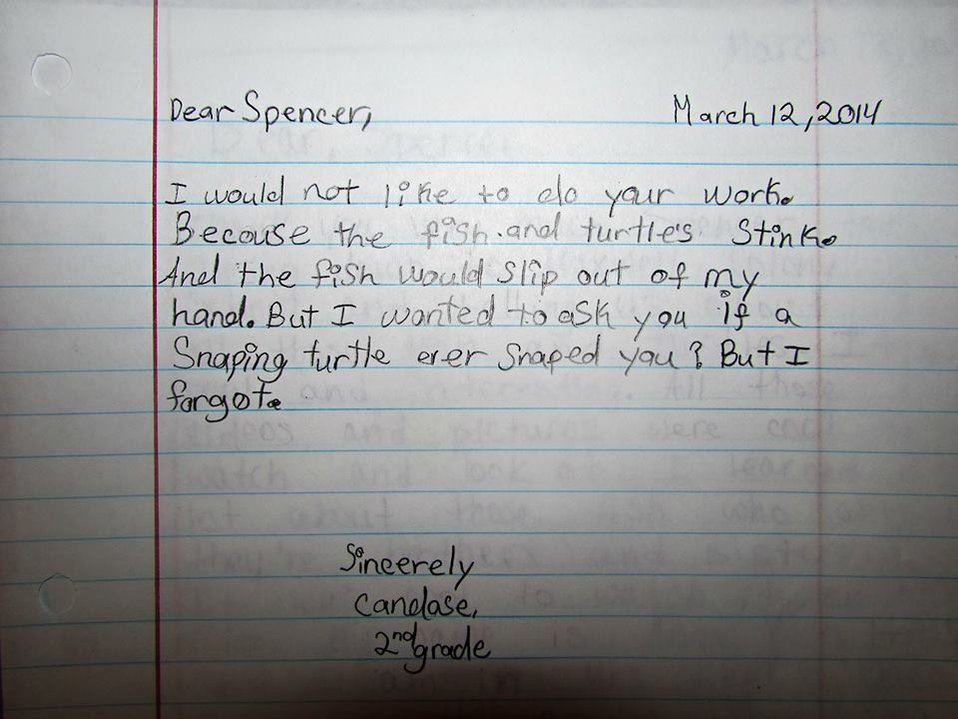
Thanks?

Usually our tours inspire kids to become biologists. That was not the case with this 2nd grader.